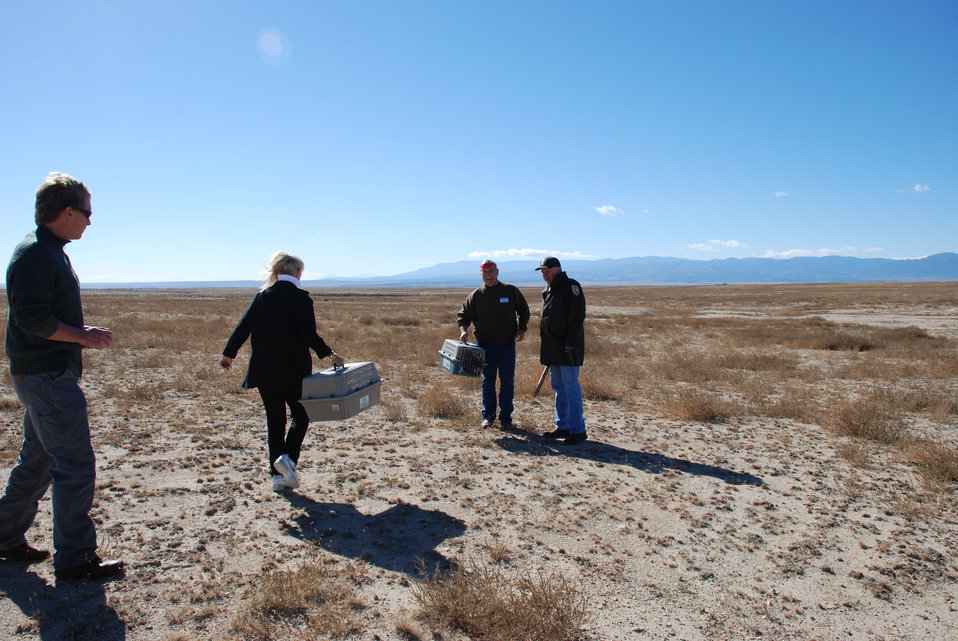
Black-footed Ferret Release

On Wednesday, October 30, 2013, thirty endangered black-footed ferrets were released onto cattle rancher Gary Walker's land, west of Pueblo, Colorado.

The release launched a potentially new way of preserving endangered species and was accomplished by way of a Safe Harbor Agreement (SHA). This SHA provides opportunities for private and Tribal landowners to volunteer their lands for reintroductions of this endangered species without affecting their land-use activities beyond mutually agreed-upon measures. It also extends these assurances to surrounding non-participating lands and other landowner interests. This SHA will be an important step in promoting the recovery of this iconic species.